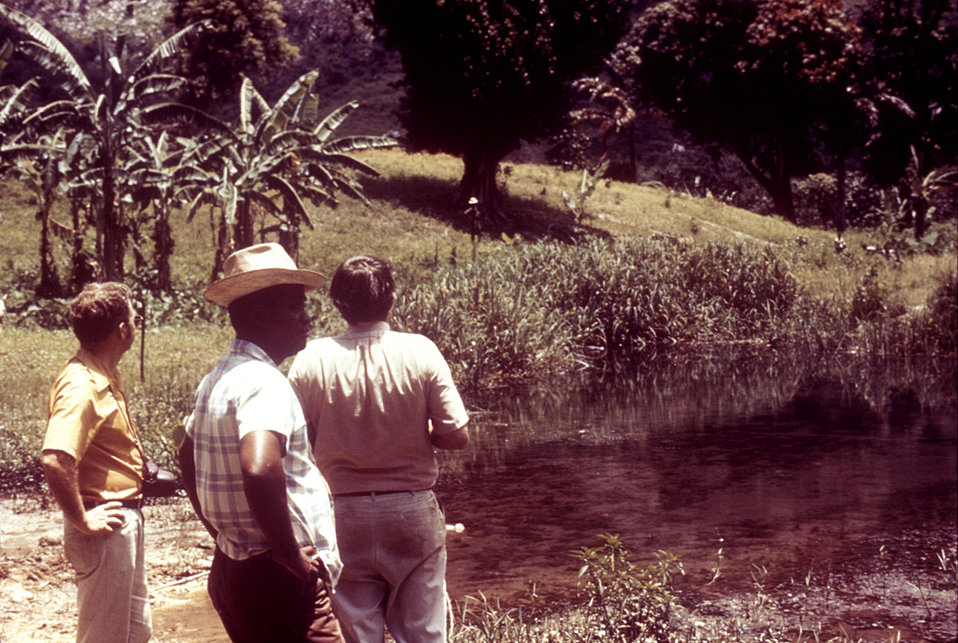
This 1972 photograph depicted a number of entomologic field technicians investigating a tropical site in Haiti known to be an Anopheles spp. mosquito breeding ground.